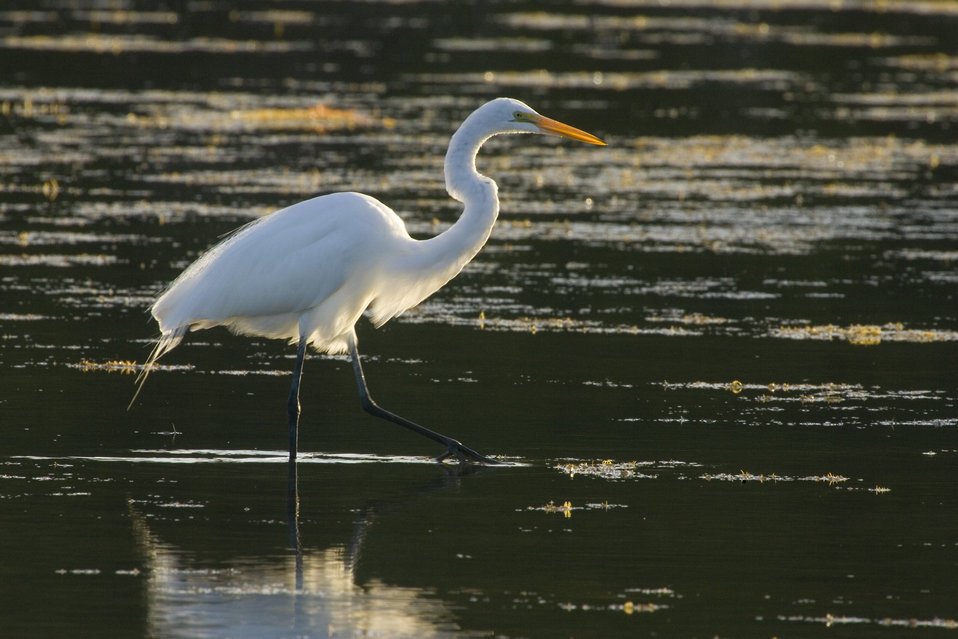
Great Egret

A Great egret strolls through the water in search of food.